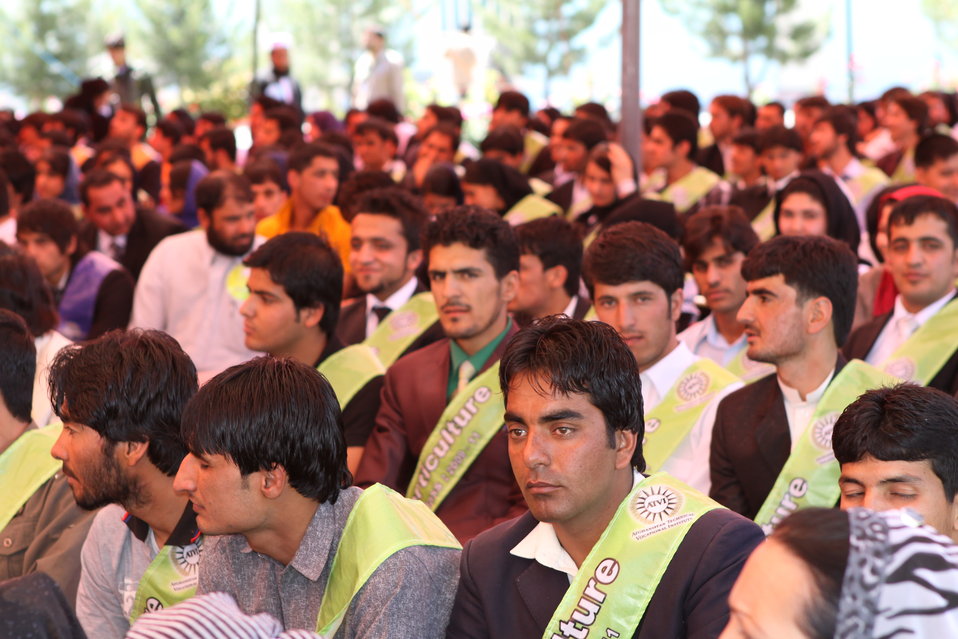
100522 ATVI Graduation 040